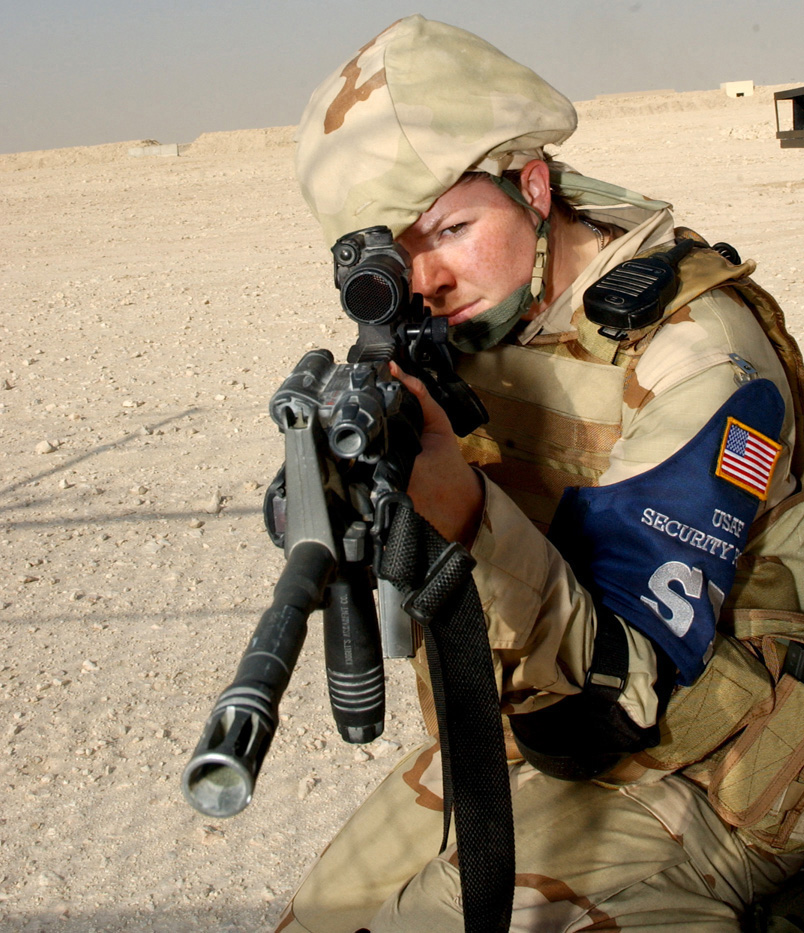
Patrol

SOUTHWEST ASIA -- Senior Airman Monica Whitmore takes aim during a patrol at a forward-deployed location. Airman Whitmore is assigned to the 379th Expeditionary Security Forces Squadron and is deployed from Mildenhall, England.